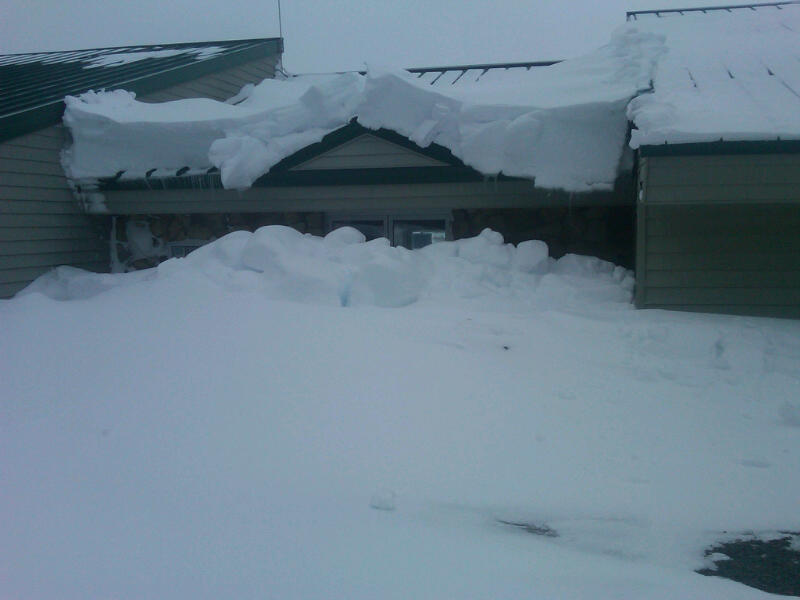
Hurricane Sandy snows at Canaan Valley National Wildlife Refuge (WV)

Hurricane Sandy dumped up to three feet of snow at Canaan Valley National Wildlife Refuge. The refuge visitor center is inaccessible after the storm.